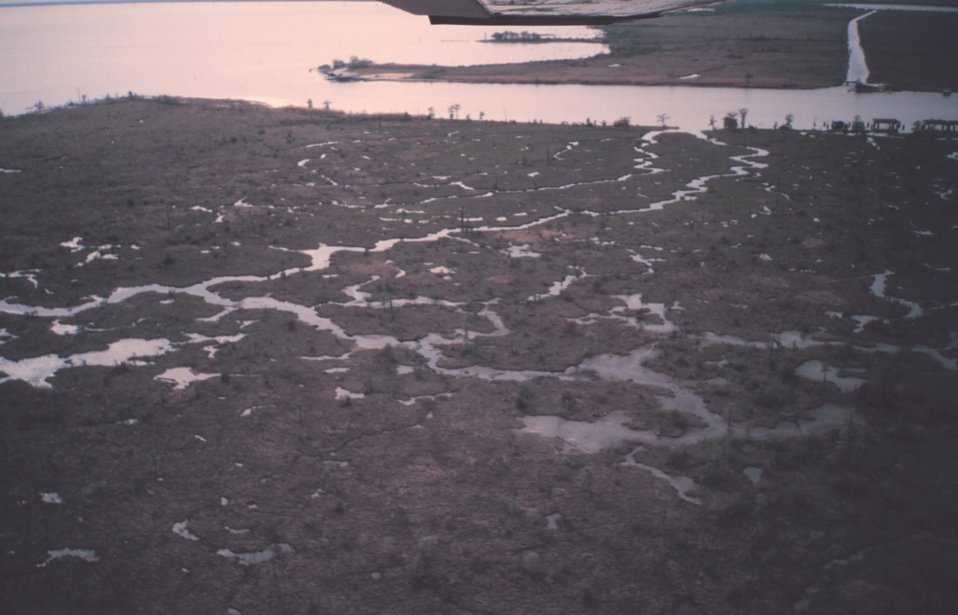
Cypress marsh at the edge of Lake Ponchartrain as seen from the air.